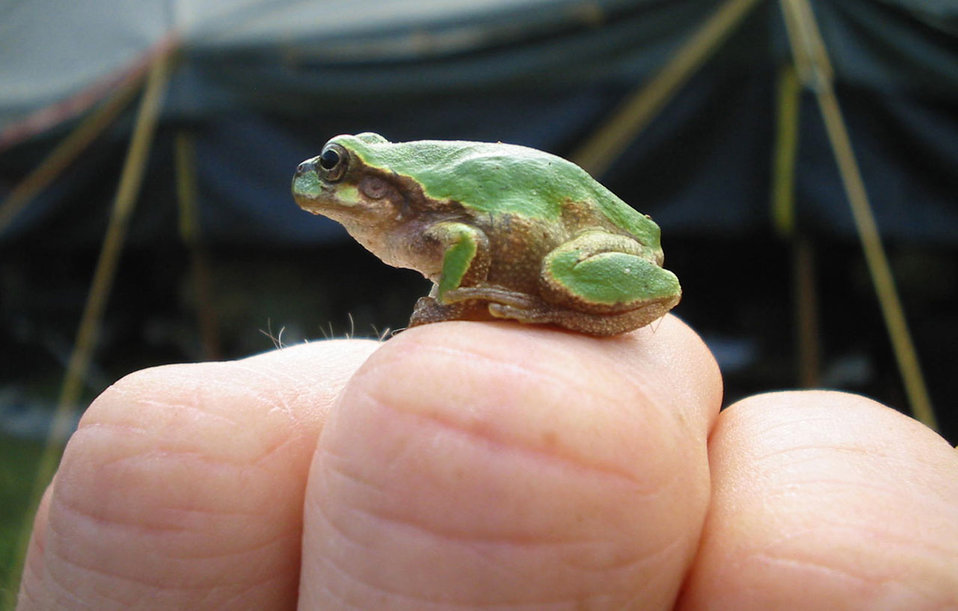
Frog on knuckles

Frog on my knuckles.